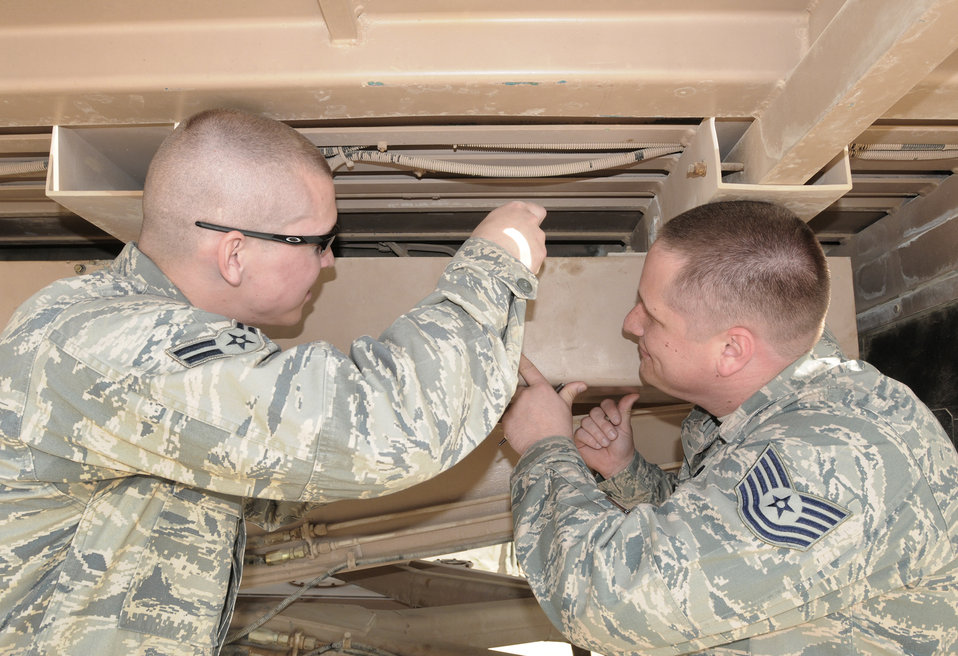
Keeping them running

Airman 1st Class Chris Kuczynski (left) and Tech. Sgt. Greg Marchand, 506th Expeditionary Logistics Readiness Squadron vehicle maintainers, perform maintenance on a 25,000-pound cargo loader April 2, 2010, at Forward Operating Base Diamondback in Mosul, Iraq. These Airmen maintain three aircraft cargo loaders as well as two pick-up trucks on the Army-controlled airfield to support its movement control team mission. Sergeant Marchand is deployed from Bolling Air Force Base, D.C. and Airman Kuczynski is deployed from Hill AFB, Utah.